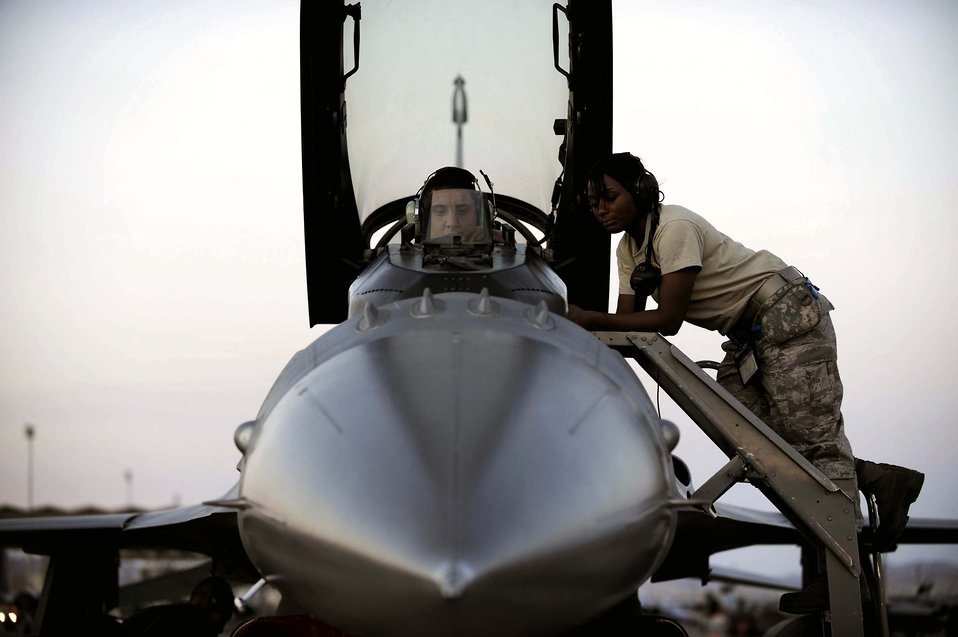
Nighttime operations

Senior Airman Alden Gehrt sits in the cockpit of an F-16 Fighting Falcon and Staff Sgt. Tarha Mazyck conduct routine system maintenance before night flying operations during Red Flag 09-3 Feb. 26 at Nellis Air Force Base, Nev. Red Flag is a multinational exercise providing a realistic environment to practice combat scenarios. Airman Gehrt is an avionics apprentice and Sergeant Mazyck is an an avionics craftsman. Both are deployed here from the 52nd Aircraft Maintenance Squadron at Spangdahlem Air Base, Germany.